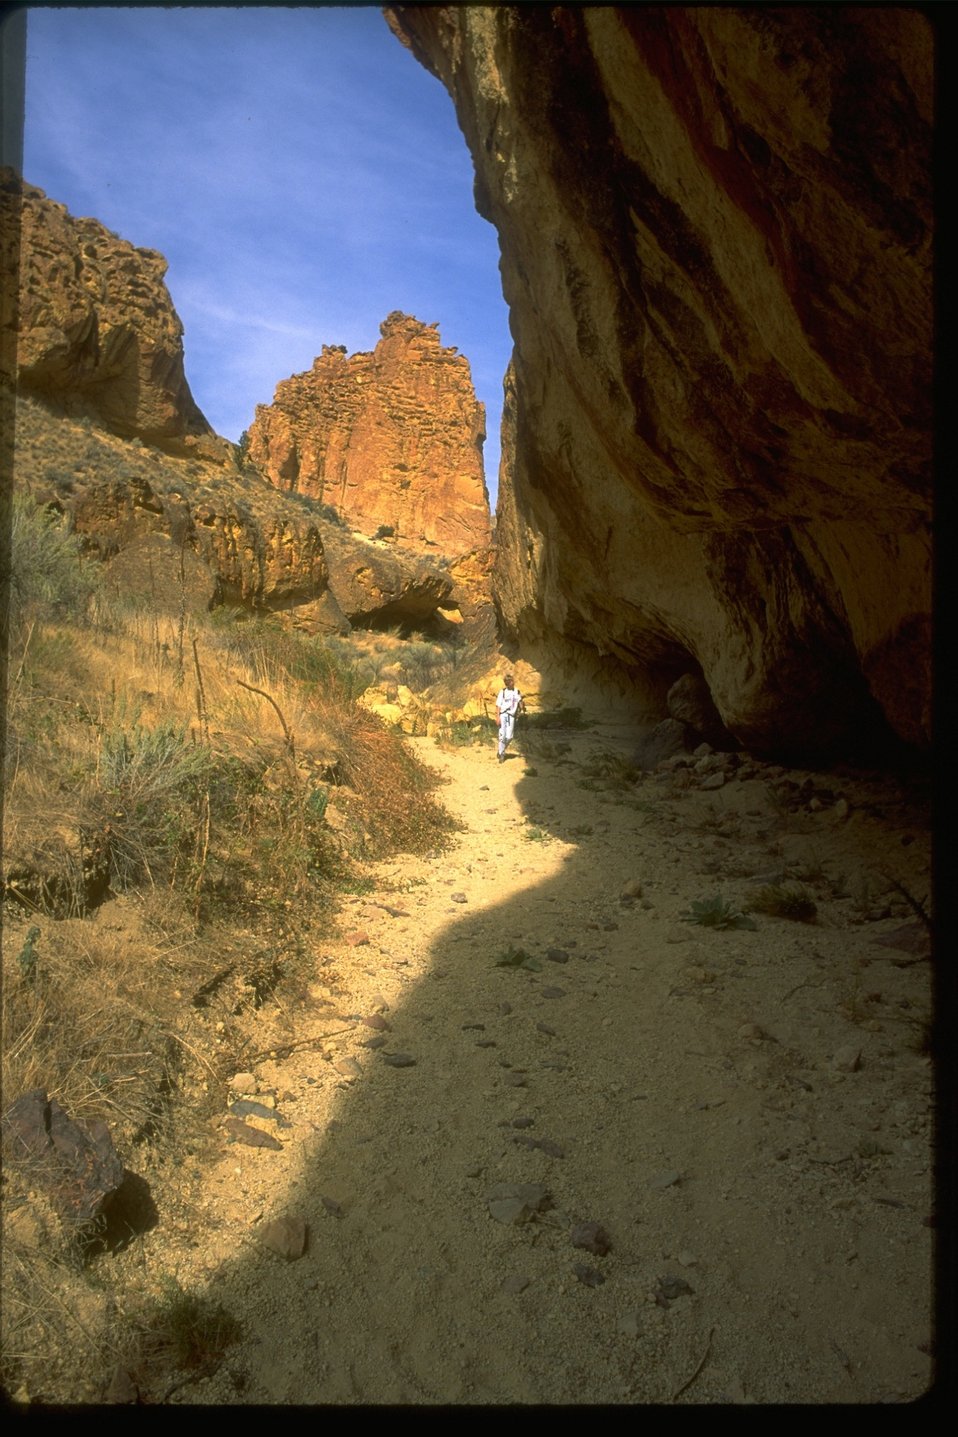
Leslie Gulch Series.